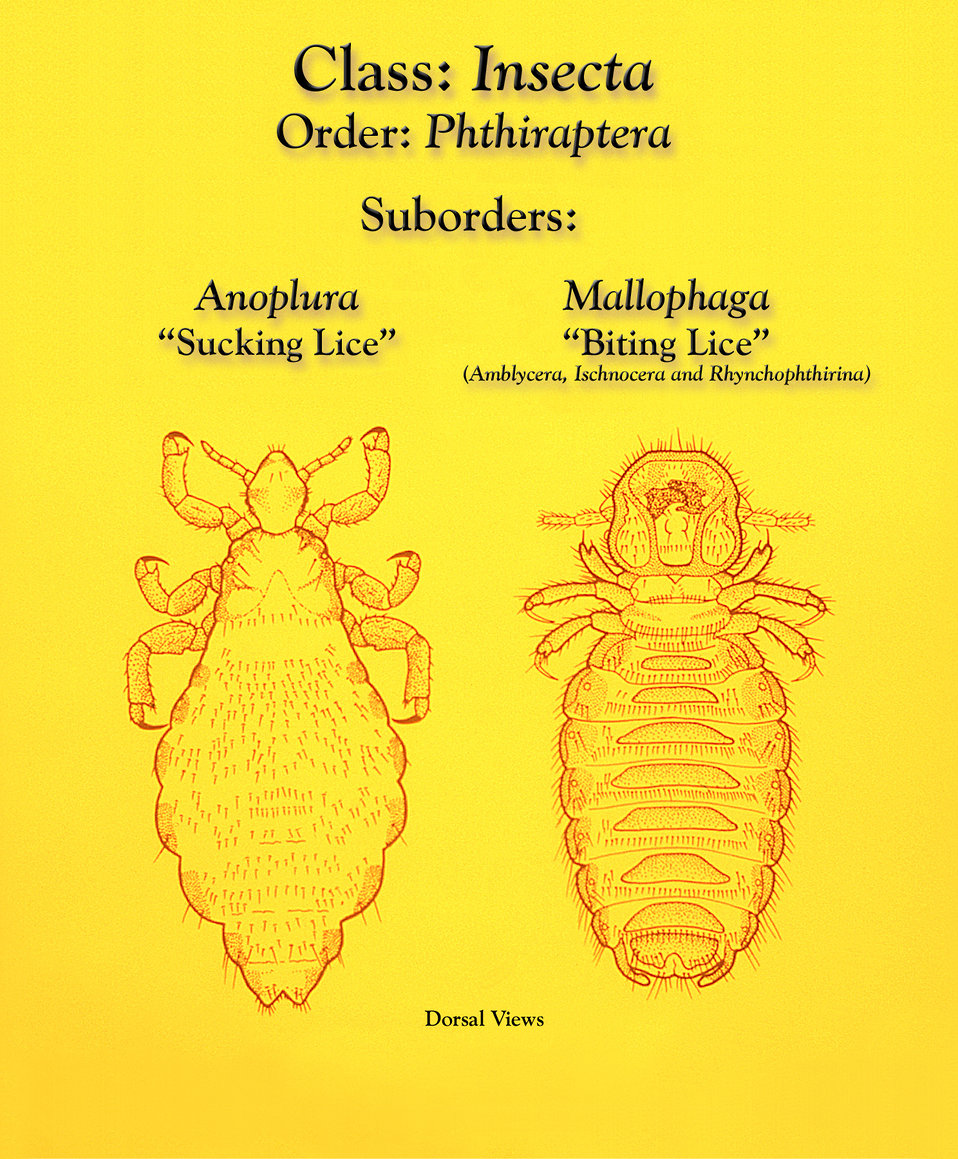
This illustration depicts the morphologic characteristics found to be displayed by representatives of the taxonomic suborders Anoplura, or 'sucking lice', and Mallophaga, or 'biting lice'.